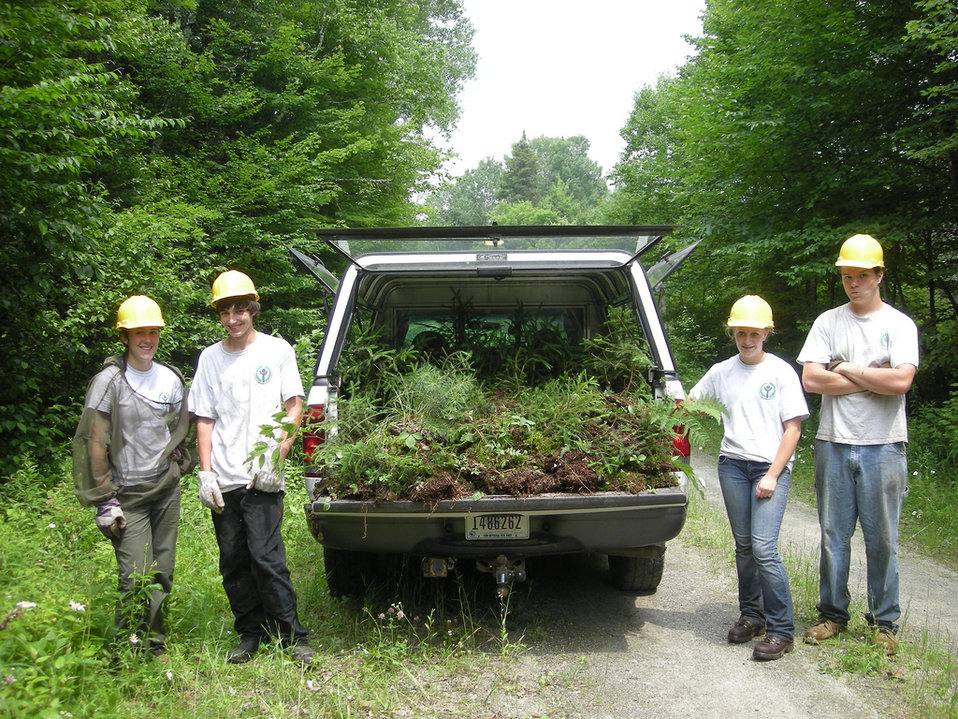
Harvesting spruce seedlings

U.S. Fish and Wildlife Service